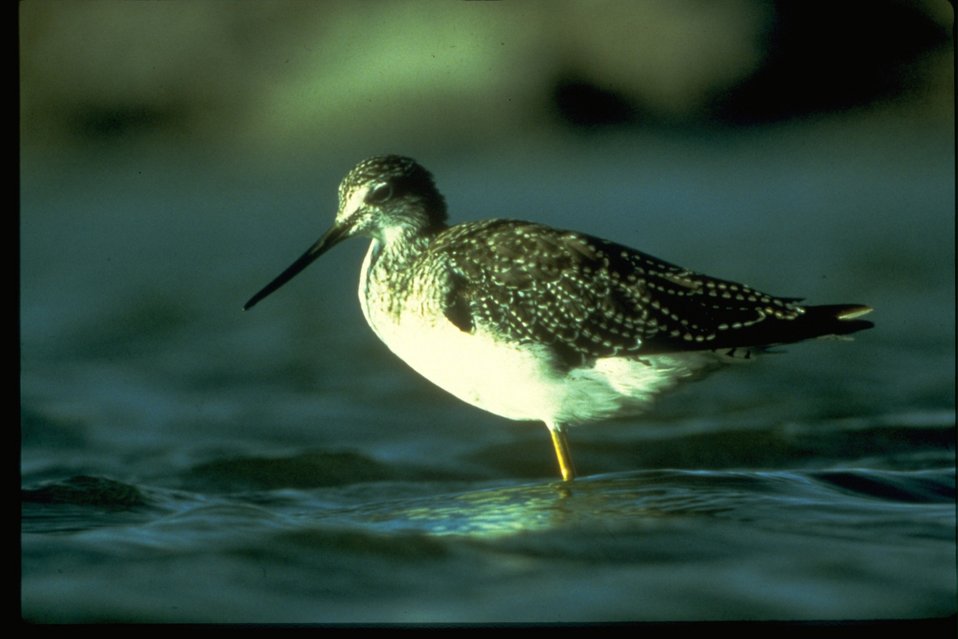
A Sandpiper standing in some body of water.